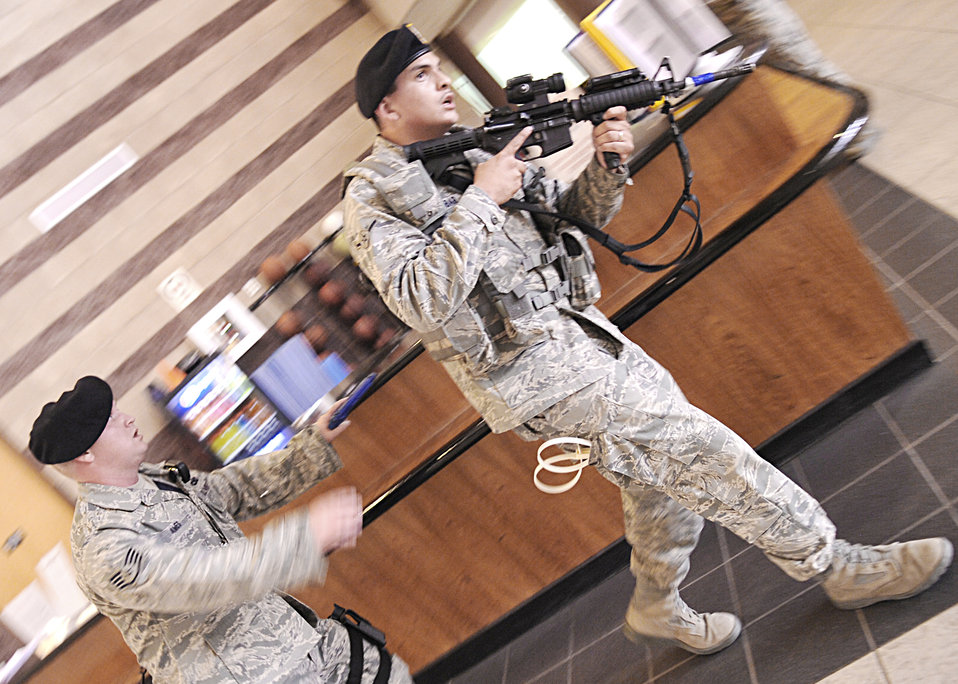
Holloman Airmen train for worst in active shooter exercise

Staff Sgt. Craig Ames and Airman Pedro Escobar conduct a building sweep at the Domenici Fitness and Sports Center March 11, 2010, at Holloman Air Force Base, N.M. The exercise helped prepare the 49th Fighter Wing members for future exercises and possible real-world situations. Sergeant Ames and Airman Escobar are 49th Security Forces Squadron members.